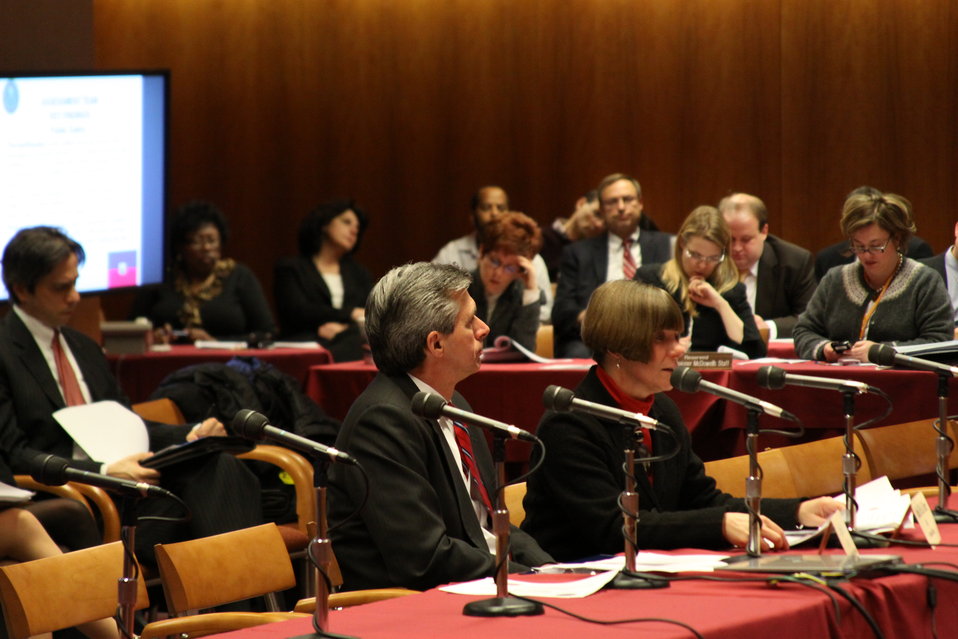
Open Commission Meeting - 2/18/2010

The Federal Communications Commission will hold an Open Meeting in Washington, DC. on February 18, 2010, which will include the following items:

E-Rate: An Order and Notice of Proposed Rulemaking to enable schools that receive funding from the E-Rate program to allow members of the general public to use the schools' Internet access during non-operating hours at no additional cost to the Universal Service Fund. This order and notice do not permit or require any changes to E-Rate applications due on February 11, 2010; Ex Parte Reform: A Notice of Proposed Rulemaking to improve the transparency and effectiveness of the FCC's decision-making process by reforming the ex parte rules; Procedural Reform: A Notice of Proposed Rulemaking to enhance the efficiency, openness, and transparency of the Commission's proceedings by improving and modernizing certain organizational and procedural rules; National Broadband Plan Status Report: Commission staff will report on the status of the National Broadband Plan, providing a framework for the national purposes portion of the Plan.